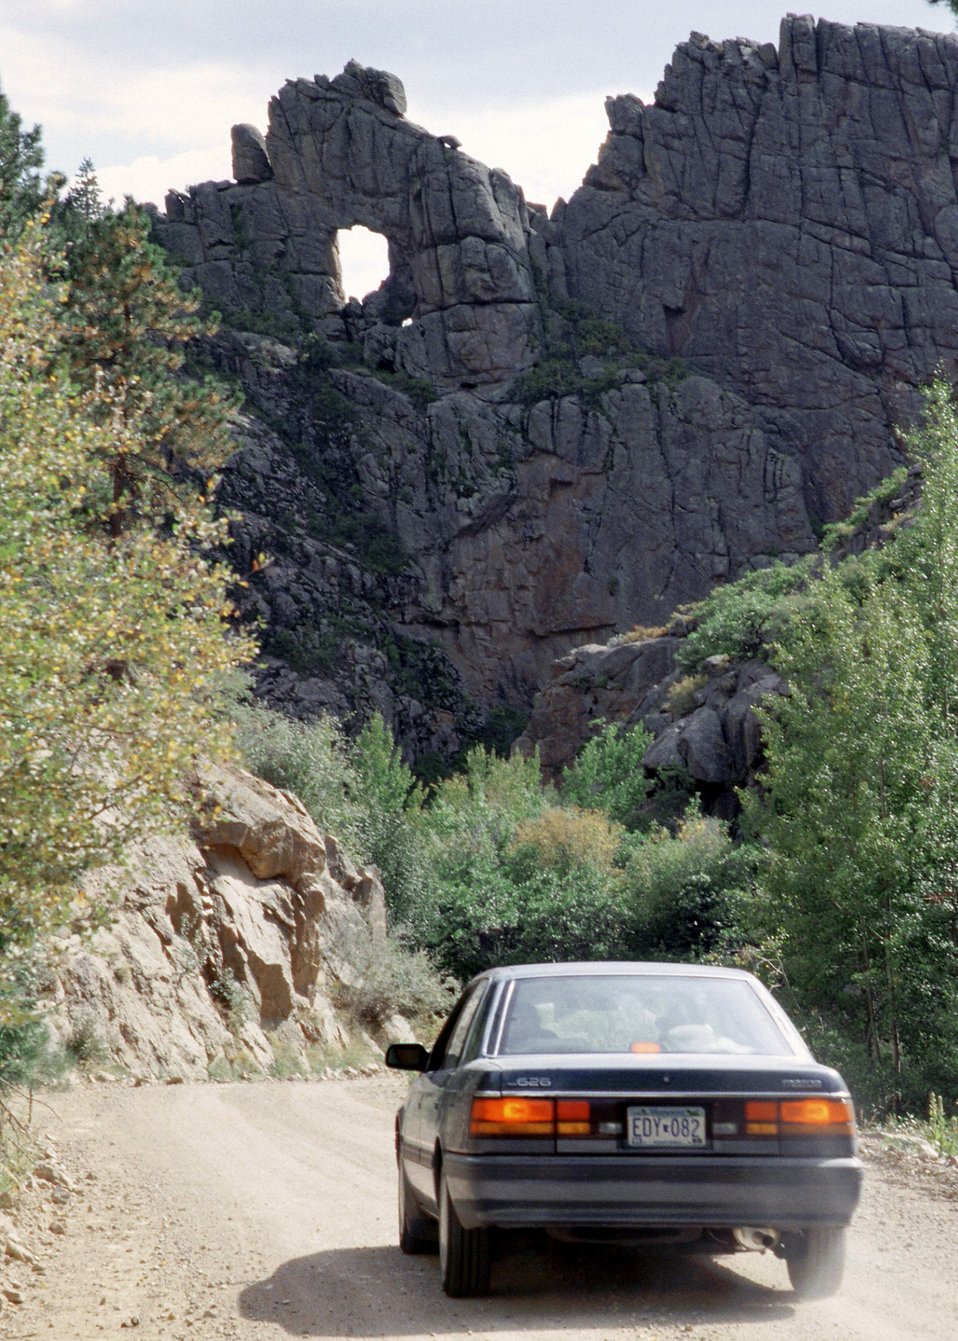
Car on Sand Guitch Cities